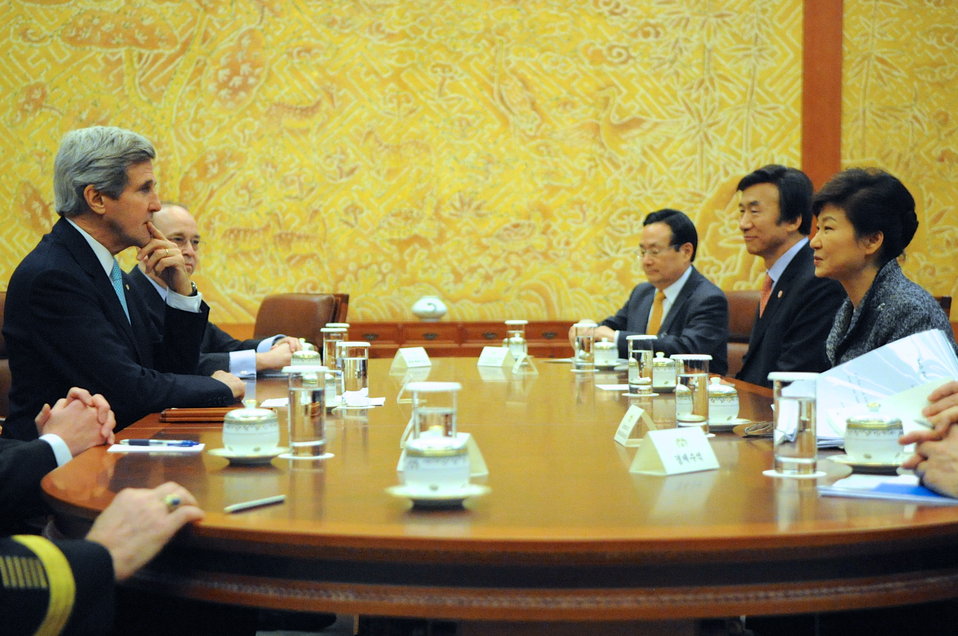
Secretary Kerry Meets With South Korean President Park

U.S. Secretary of State John Kerry listens as South Korean President Park Geun-hye speaks at the start a bilateral meeting at Blue House in Seoul on February 13, 2014.